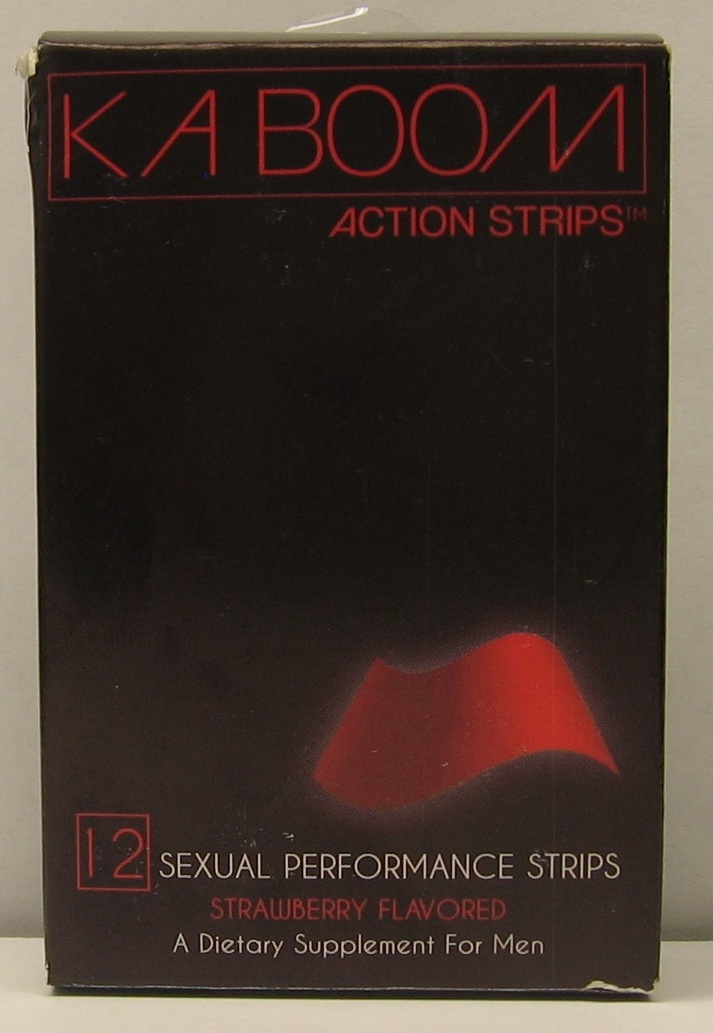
Kaboom Action Strips

March 25, 2012 - The FDA is advising consumers not to purchase or use 'Kaboom Action Strips,' a product promoted and sold for sexual enhancement. The product was found to contain sulfoaildenafil. For more information, go to www.fda.gov/Drugs/ResourcesForYou/Consumers/BuyingUsingMe...

And read this Consumer Update: Beware of Fraudulent ‘Dietary Supplements’